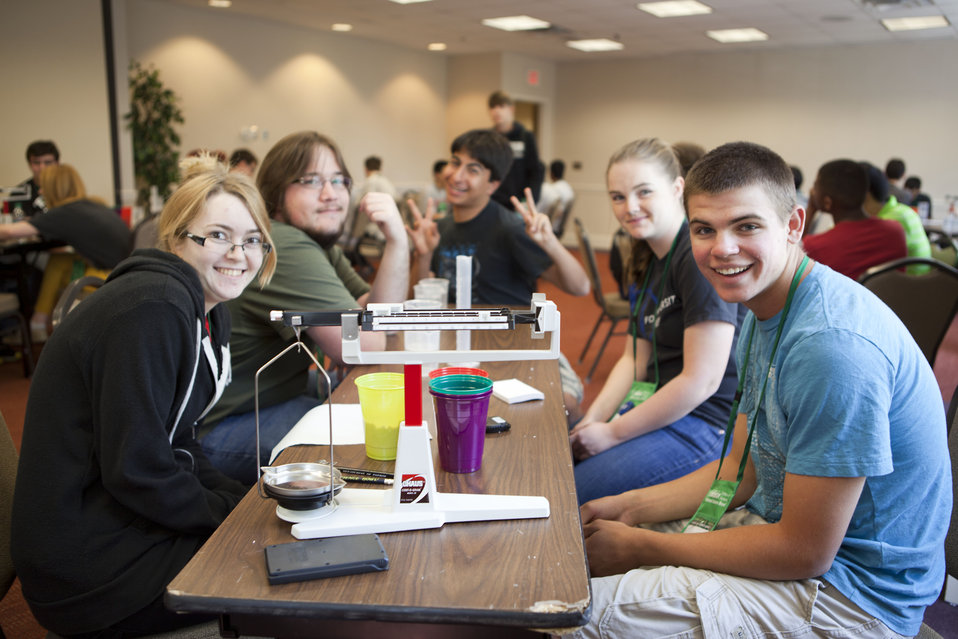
National Science Bowl 2013

The high school students participated in a team challenge competition, which prompted them to solve problems by conducting experiments and collecting data.